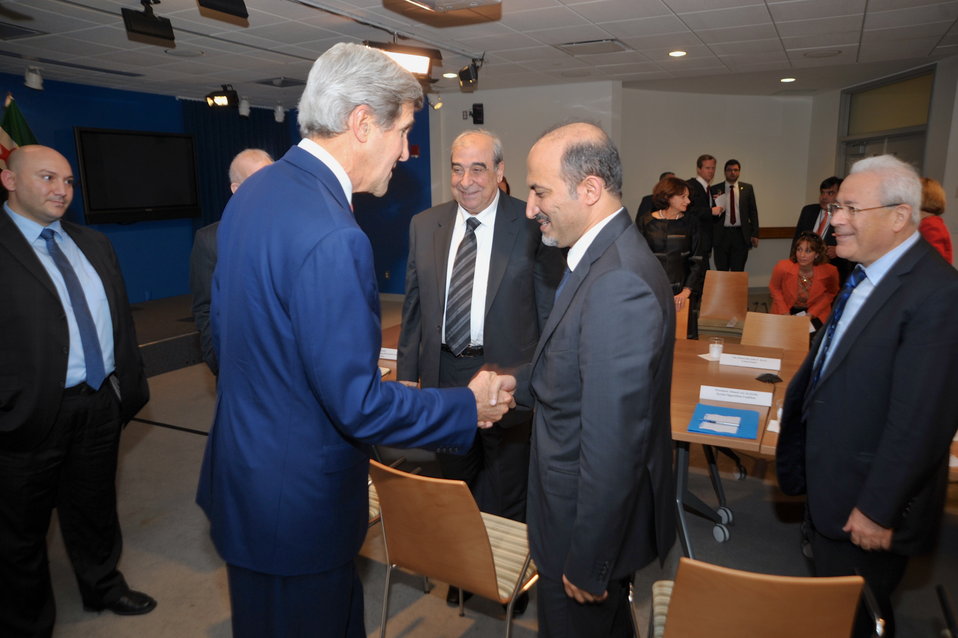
Secretary Kerry Meets With Members of the Syrian Opposition Council

U.S. Secretary of State John Kerry meets with members of the Syrian Opposition Council after visiting the United Nations in New York City on July 25, 2013.